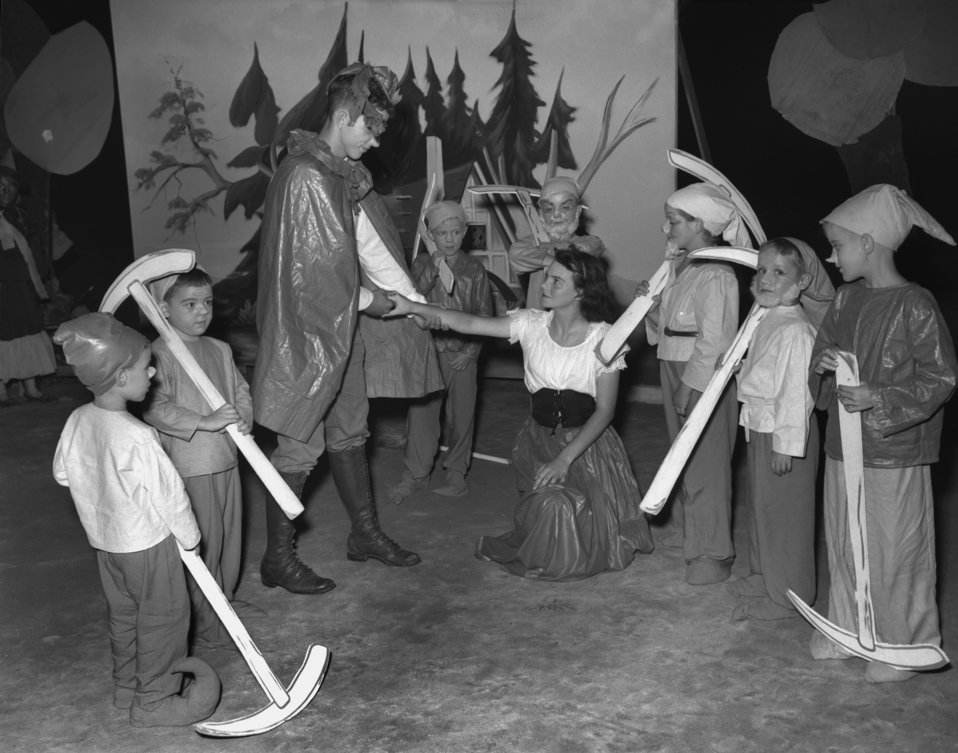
Snow White Play Oak Ridge

005178-3a DOE photo by Ed Westcott

Recreation 'Snow White' Playground Pageant at Oak Wood Park Oak Ridge Tennessee 8/19/1948